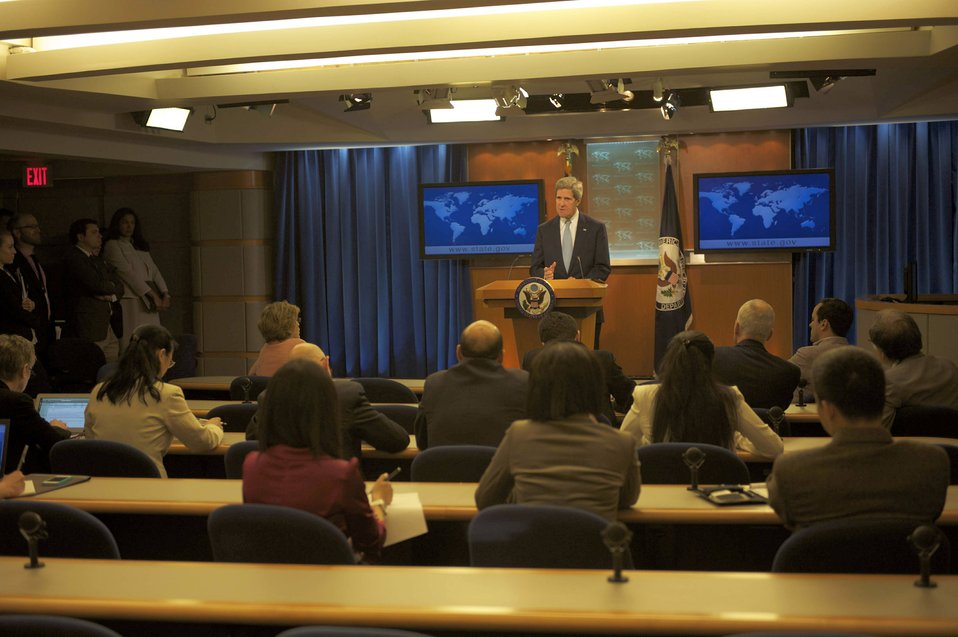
Secretary Kerry Delivers Remarks on the Release of the Human Rights Report

U.S. Secretary of State John Kerry delivers remarks on the release of the Human Rights Report at the U.S. Department of State in Washington, D.C., on April 19, 2013.